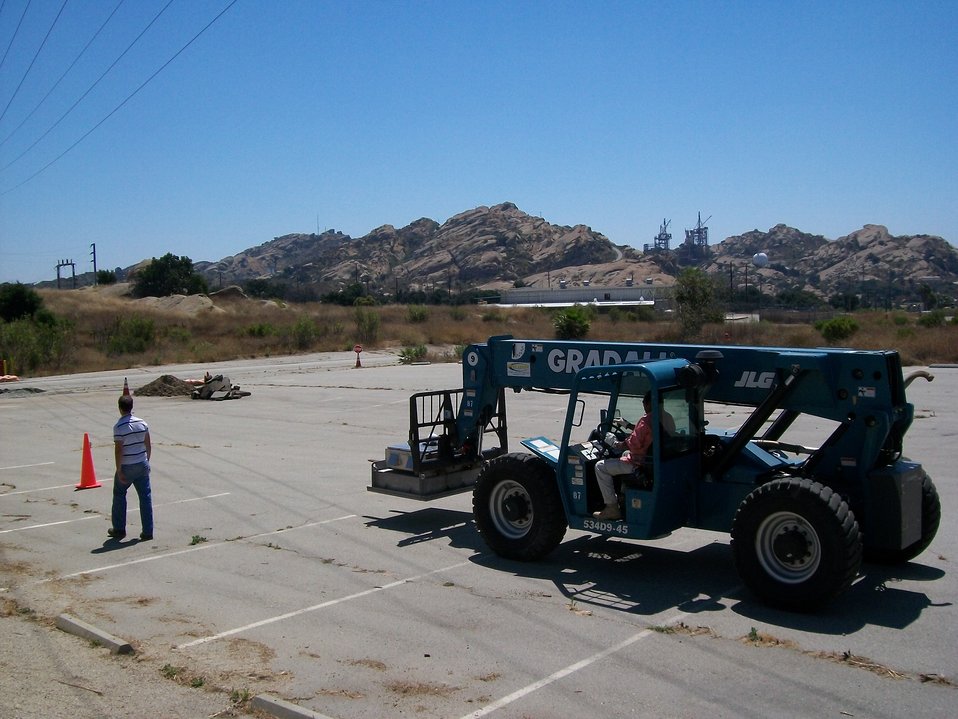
ETEC

Photo taken at the Energy Technology Engineering Center (ETEC).